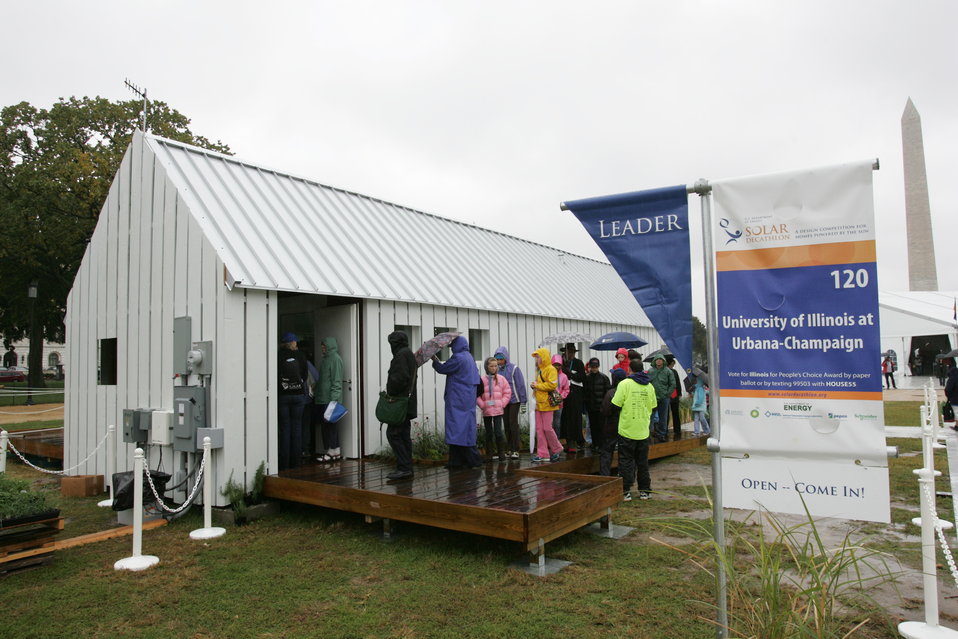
Visitors wait to tour the University of Illinois at Urbana-Champaign house at the U.S. Department of Energy Solar Decathlon on the National Mall in Washington, DC, October 15, 2009. University of Illinois won 2nd prize in the decathlon.

The U.S. Department of Energy Solar Decathlon, features energy-efficient, solar-powered houses built by 20 university teams from North American and Europe.